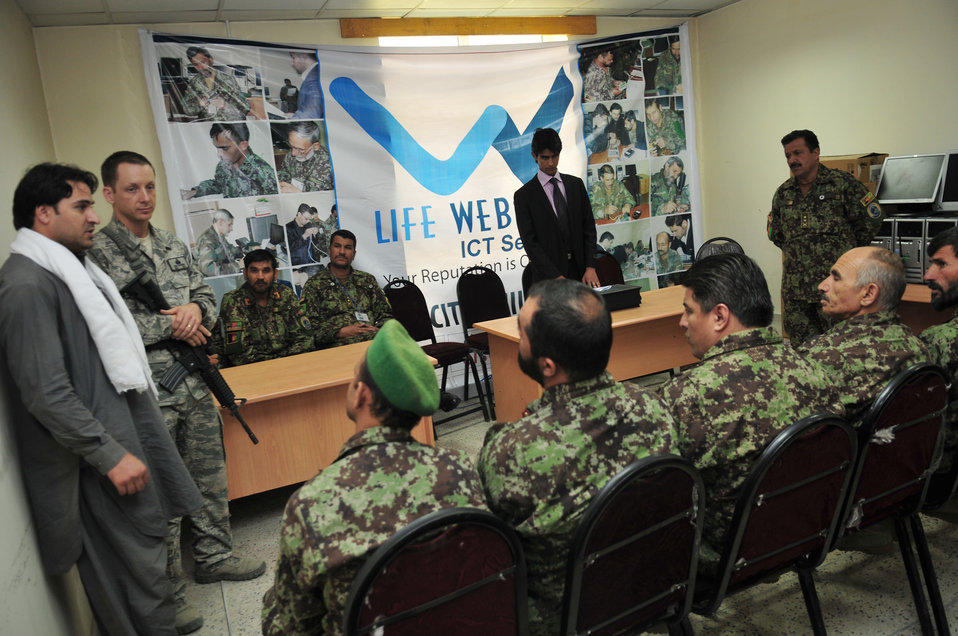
Afghan air force networking class

Fifteen Afghan air force members graduated from the A training course June 22, 2011, in Kabul, Afghanistan. The students are now capable of repairing desktop systems, troubleshooting, upgrading, configuring, installing and running overall basic network management processes.